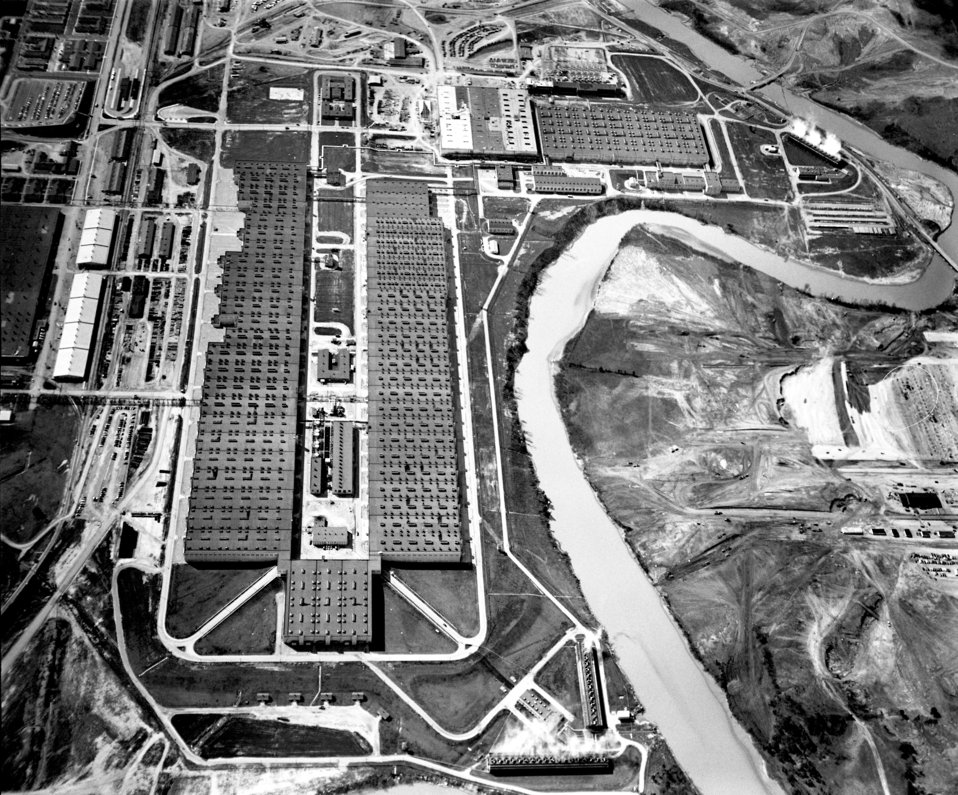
Air View K-25 General Area 1950 Oak Ridge

5905 DOE photo Ed Westcott 4-6-1950 Oak Ridge Tennessee